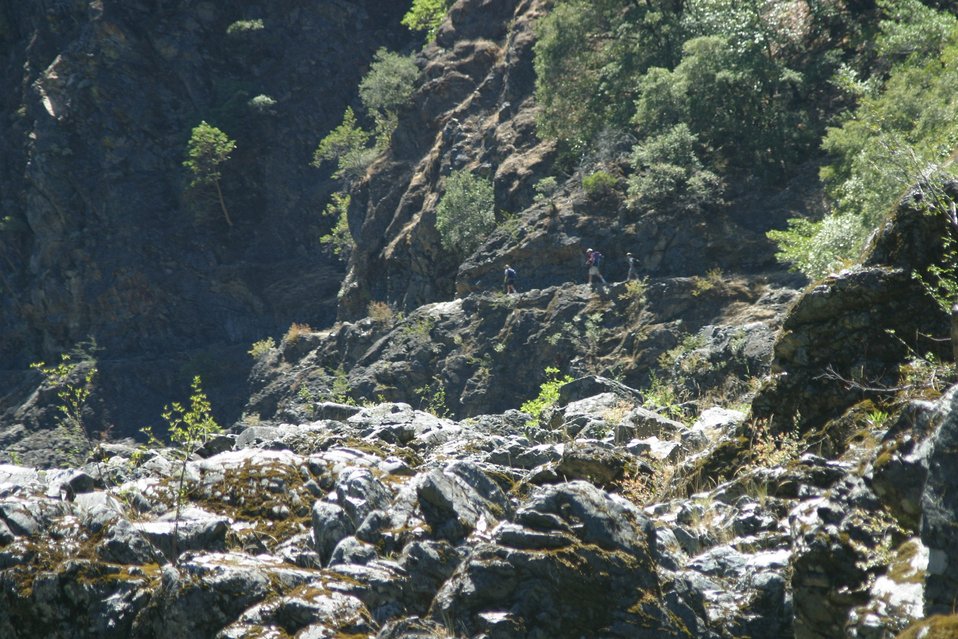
Hiking the Rogue River Trail near the Coffee Pot.